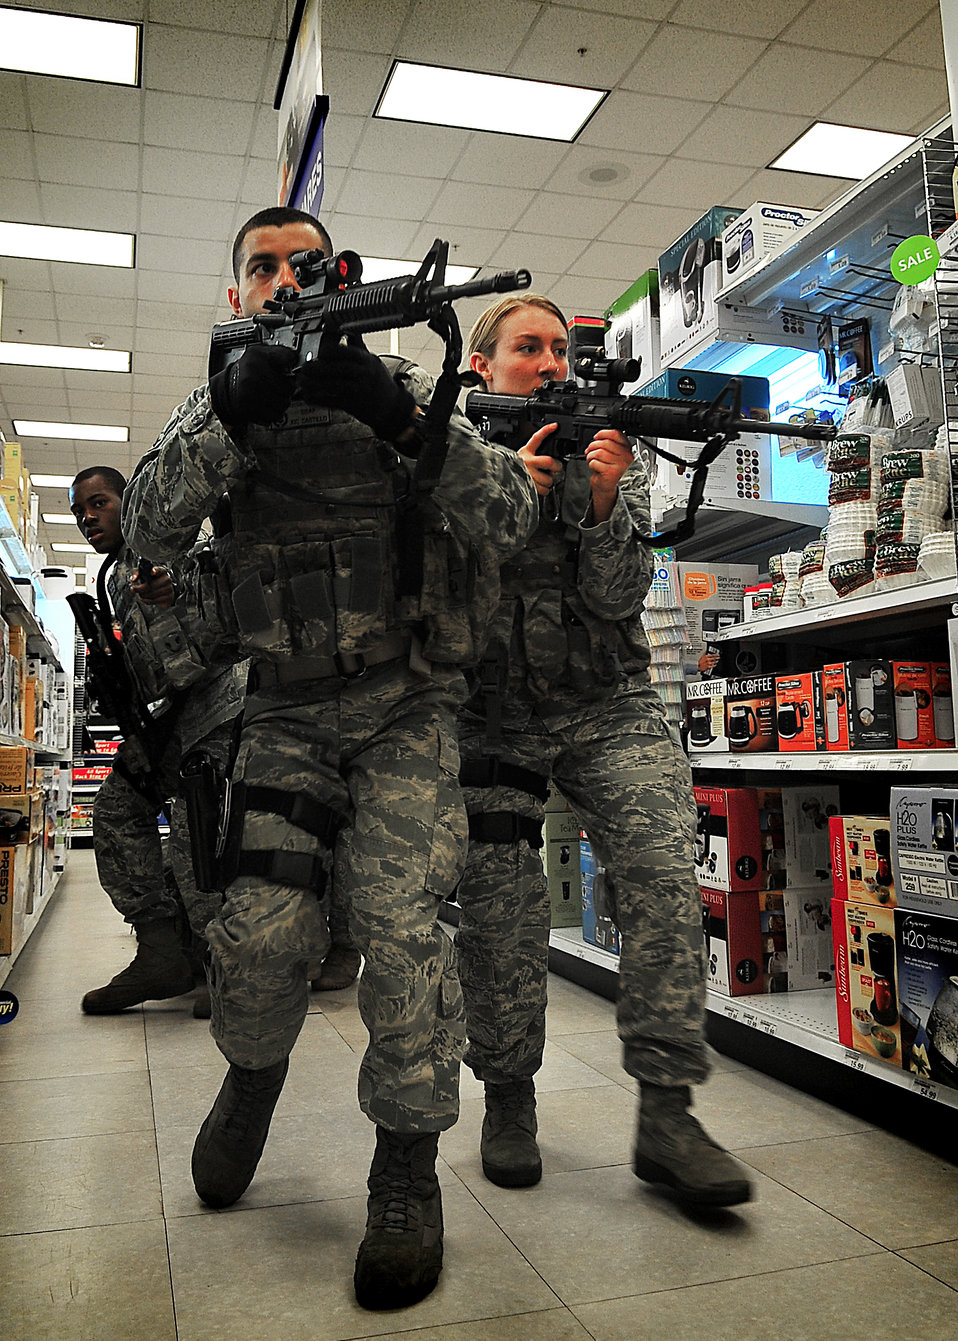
Hostage situation

Airmen from the 51st Security Forces Squadron respond to a simulated active shooter and hostage scenario at Osan Air Base, South Korea, Aug. 11, 2011. The simulation is part of a qualification course for the base’s quick-response team.